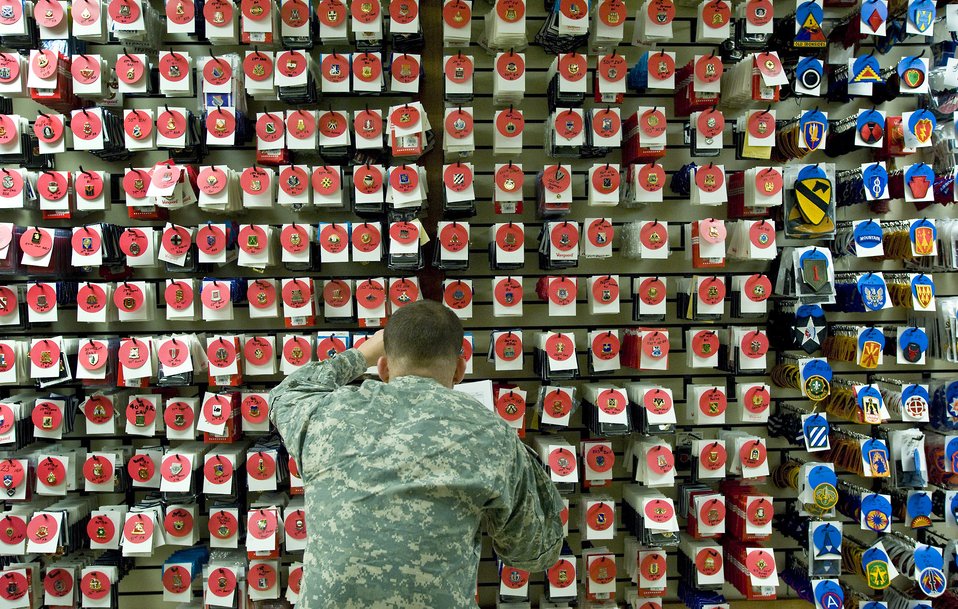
Air Force Mortuary Affairs Operations Center

Specialist Noel Rivera, a mortuary affairs specialist, inventories U.S. Army unit badges from a wall of military uniform items that is kept fully stocked with every U.S. Air Force, Army, Marine, Navy and Coast Guard badge, patch, ribbon or decoration. The uniform section of the Air Force Mortuary Affairs Operations Center at Dover Air Force Base, Del., prepare uniforms for the fallen heroes and work with military escorts for the dignified-transfer-of-remains process. Specialist Rivera is deployed from the Army Reserve, 311th Quartermaster Company in Puerto Rico.